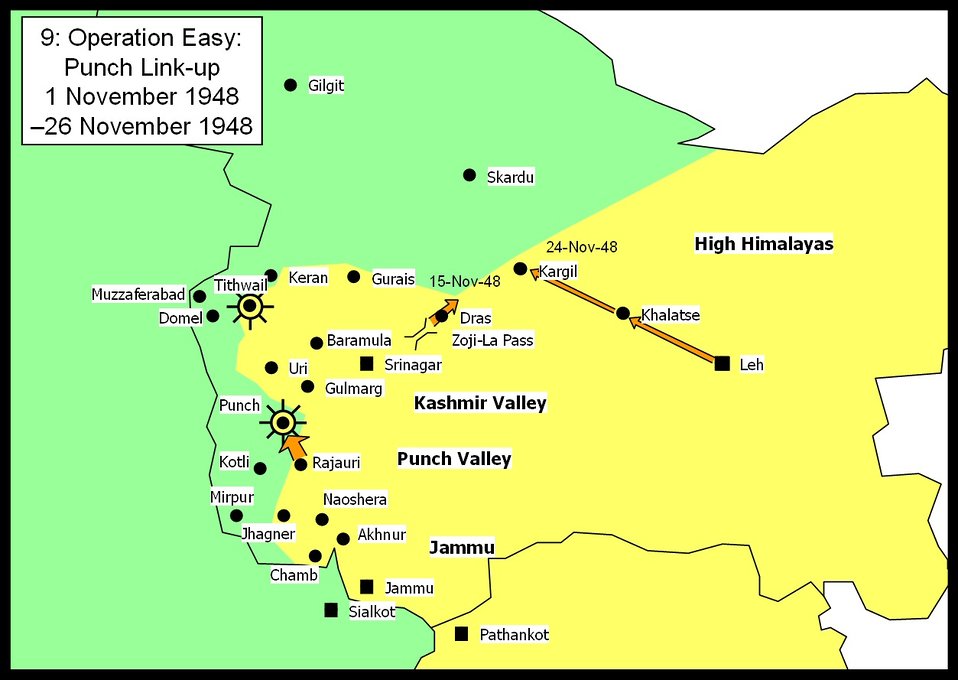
Author Mike Young sr:Слика:JK09low